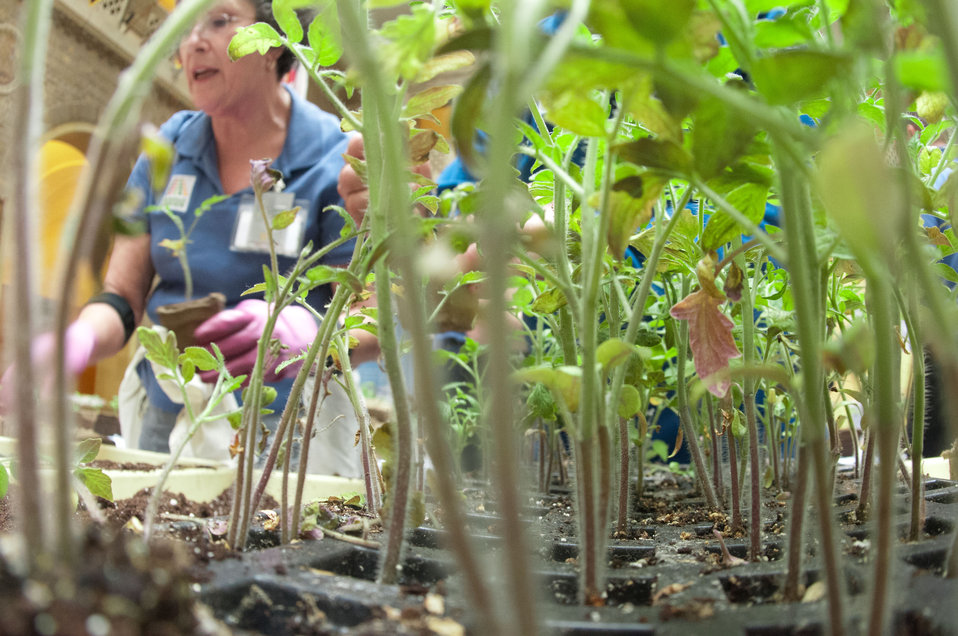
U.S. Department of Agriculture (USDA) National Organic Program, Agricultural Marketing Specialist Lee Cliburn prepares seedling for the People’s Garden Initiative and volunteer Executive Master Gardeners distribution of ‘Abraham Lincoln” Tomato seedlings that the People’s Garden Initiative is distributing to USDA employees in celebration of the 150th Anniversary of the U.S. Department of Agriculture, on Tuesday, May 15, 2012 in Washington, D.C., on this day, 150 years ago, President Abraham signed the Department into existence during the Civil War. In 1923 the H.W. Buckbee seed company of Rockford, Illinois introduced an heirloom variety named in honor of Illinois’ Greatest Son – Abraham Lincoln. The plant produces large beefsteak tomatoes in about 90 days. Volunteer Executive Master Gardeners planted and cultivated more that 3,000 seedlings ranging in size from one inch to more than a foot tall, so people could choose the best ones to transport home and to stagger the harvest by selecting a small and large seedling. One of the hopes of this event is to share the joys of gardening and harvesting, as well as the opportunity to share your harvest in your community. Seed packets are being distributed to People’s Gardens worldwide.